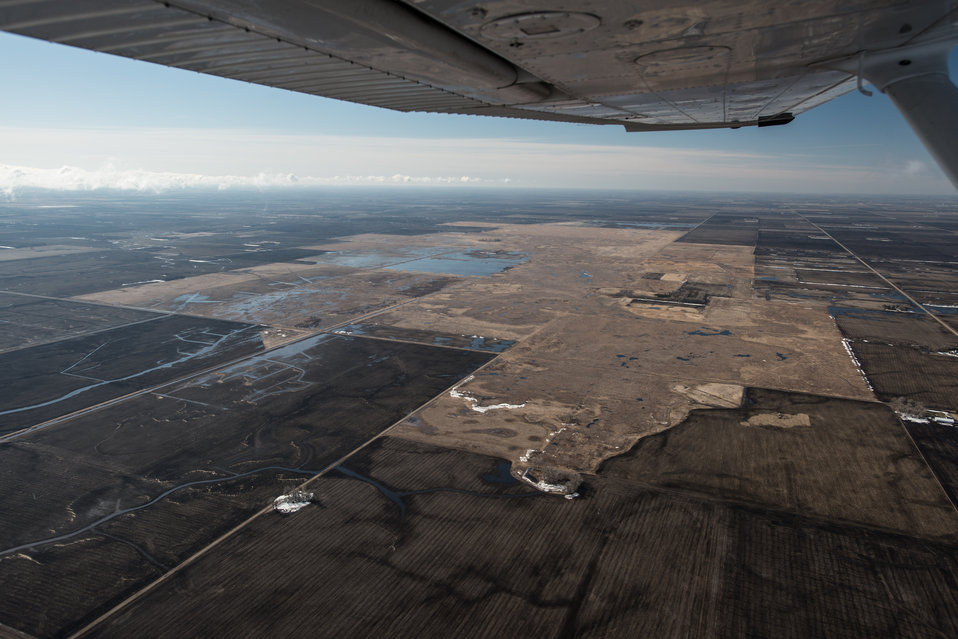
Ehlert U.S. Department of Agriculture (USDA) Natural Resources Conservation Service (NRCS) Wetland Reserve Program (WRP) in Wilkin County, MN, on Tuesday, April 30, 2013. For information about this and other programs from the USDA Red River Basin Initiative (RRBI) please see www.mn.nrcs.usda.gov/news/features13/RRBI.html.